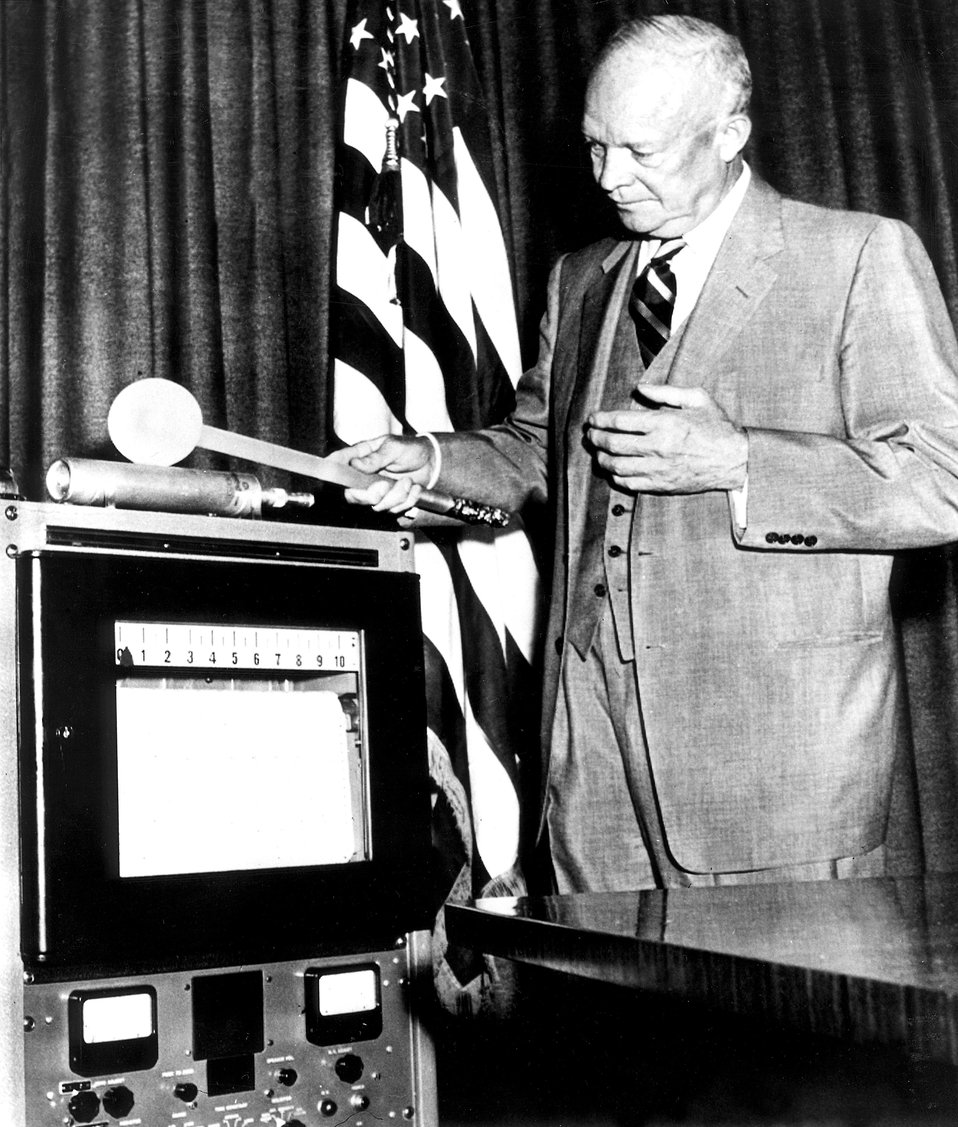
President Dwight D. Eisenhower is shown here with the special atomic fission rod he used from here on Sept. 6, 1954, to break ground by remote control for the world's first full-scale atomic-electric generating station exclusively for civilian needs at Shippingport, Pa..